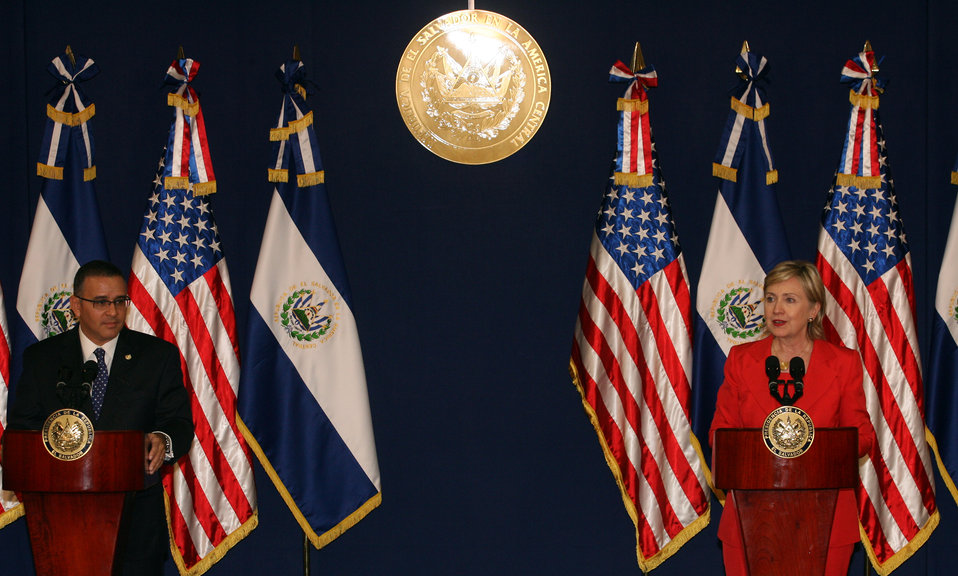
Joint Press Conference in El Salvador With Secretary Clinton and Salvadoran President

President Mauricio Funes and U.S. Secretary of State Hillary Rodham Clinton hold a press conference after their bilateral meeting in El Salvador. The press conference took place at the Presidential Palace in San Salvador.